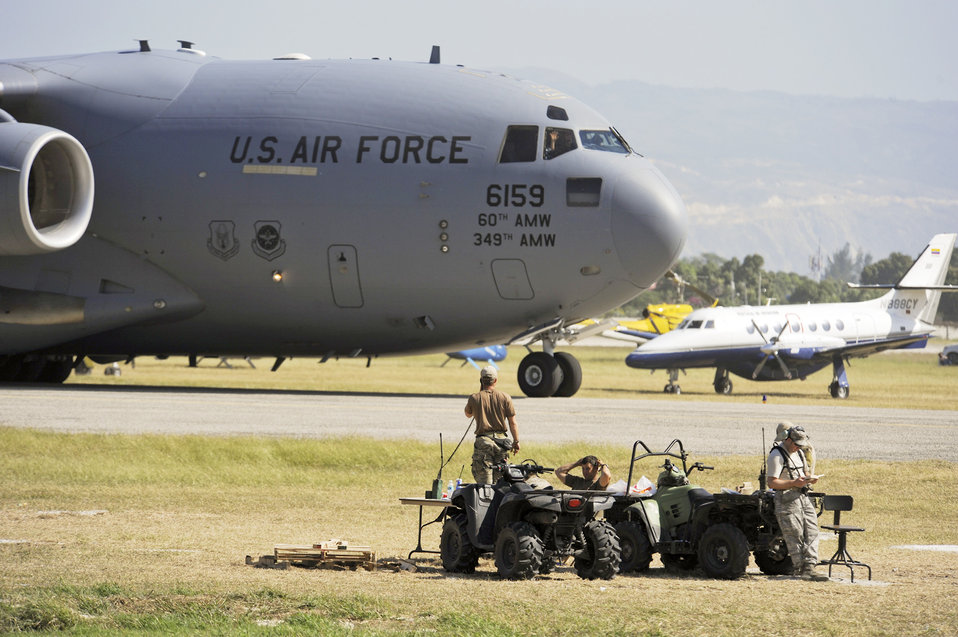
Air Force coordination team joins Joint Task Force-Haiti

Combat controllers guide a cargo aircraft from Travis Air Force Base, Calif., into Toussaint L'Ouverture International Airport Jan. 23, 2010, in Port-au-Prince, Haiti. The Airmen are from the 23rd Special Tactics Squadron at Hurlburt Field, Fla.